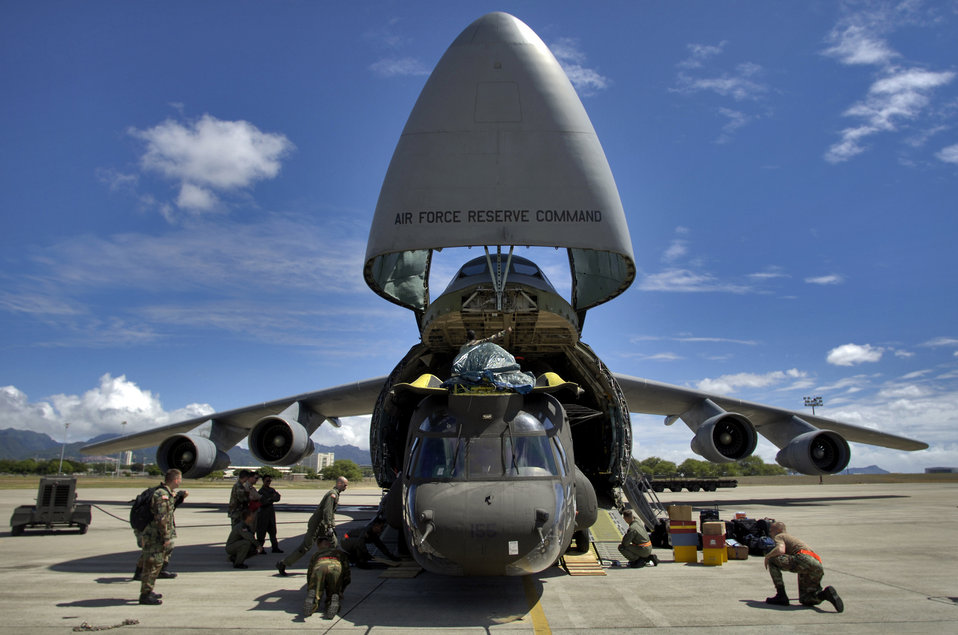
Pakistan relief efforts

HICKAM AIR FORCE BASE, Hawaii -- Airmen and Soldiers load a CH-47 Chinook heavy lift helicopter onto a C-5 Galaxy here. Company B, 214th Aviation Regiment of the 2nd Battalion, 25th Aviation Regiment at nearby Wheeler Army Air Field, received orders to deploy 60 troops, four helicopters and support equipment to Pakistan to support earthquake relief operations. A total force team here helped load the aircraft Oct. 16.